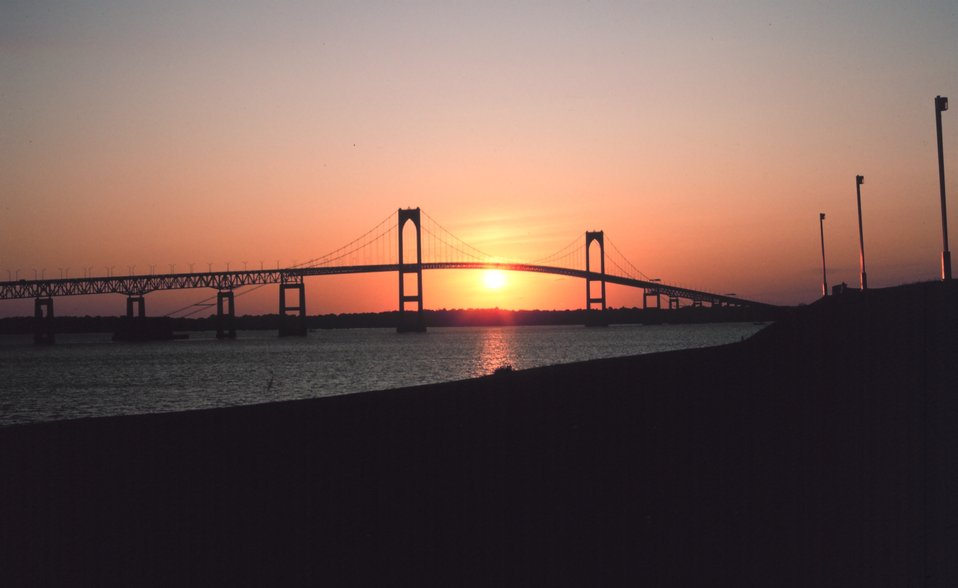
The Newport Bridge at sunset